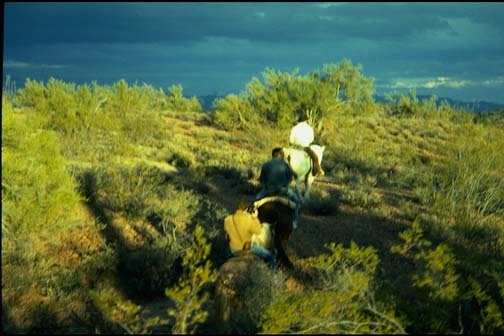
Horseback riders enjoying the desert.